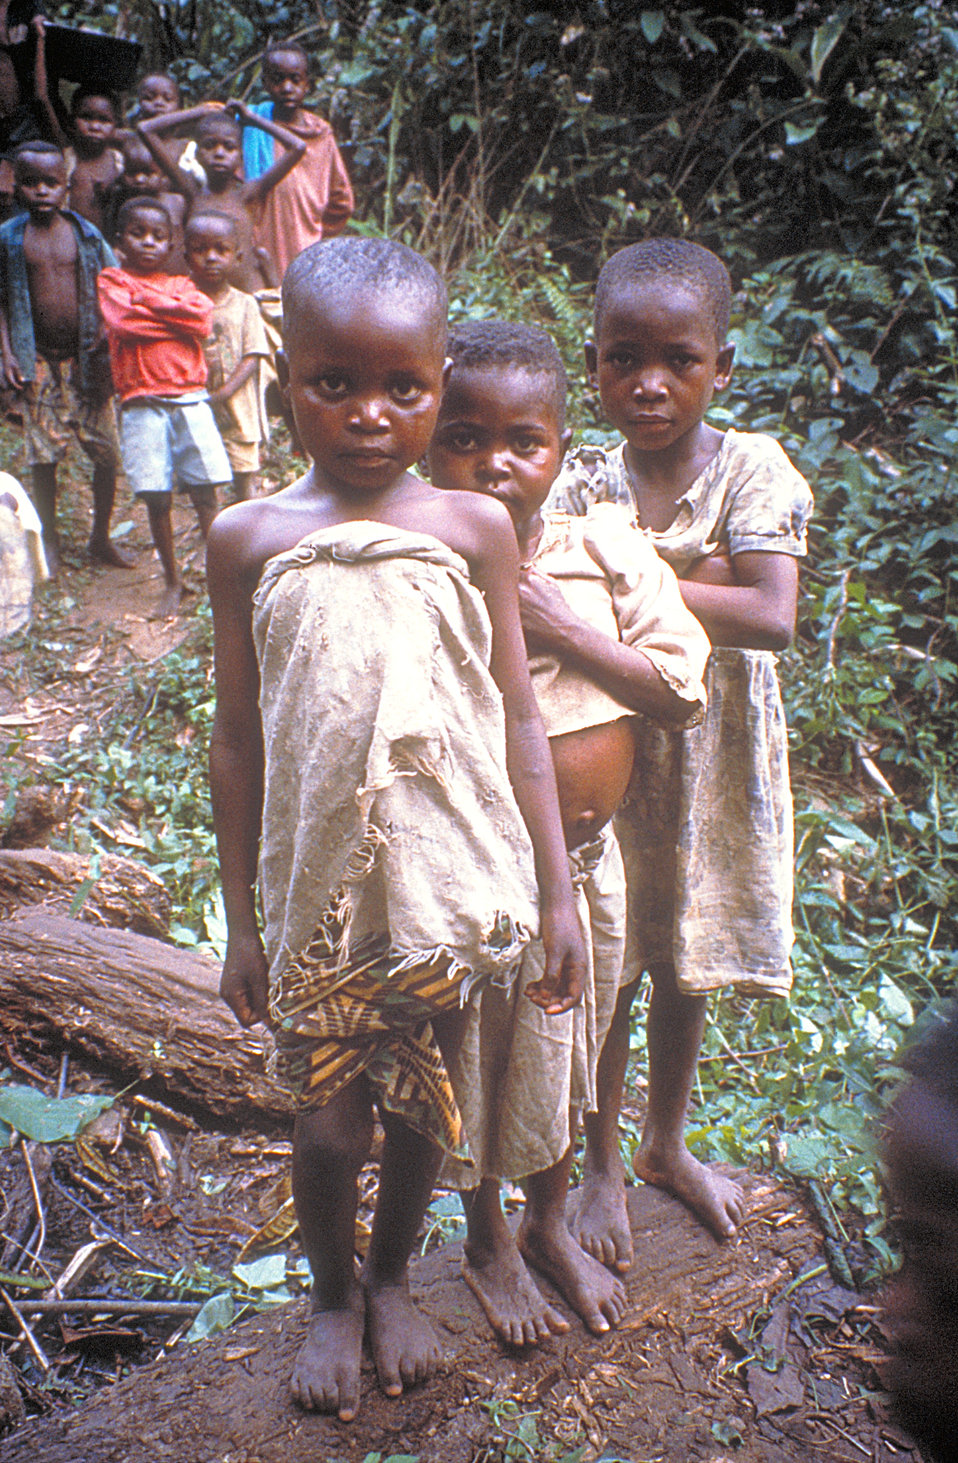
African children.